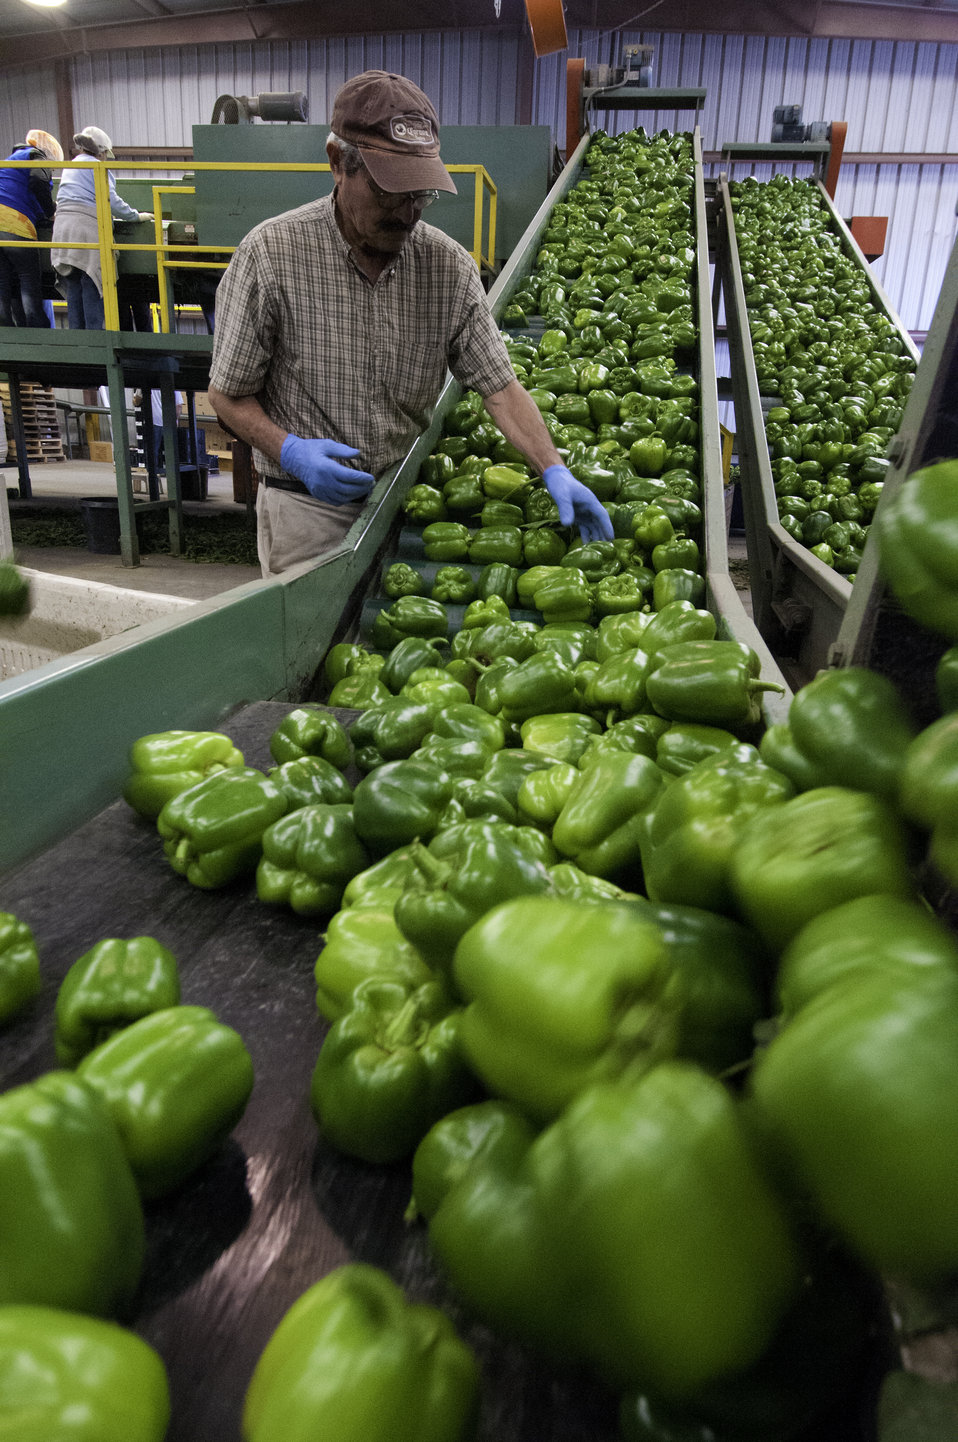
Migrant workers process green peppers on Uesugi Farms in Gilroy, CA on Wednesday, Aug. 28, 2013.